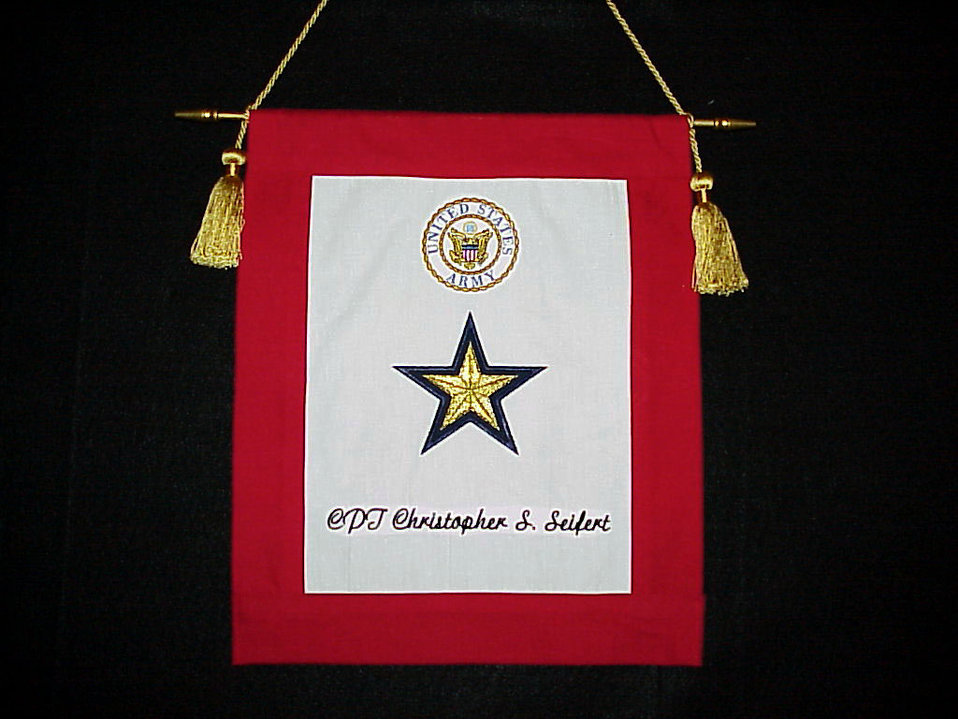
Spouses make flags to honor ultimate sacrifice

ABERDEEN PROVING GROUND, Md. (AFPN) -- Two Air Force spouses are helping revive an old tradition to honor the families of servicemembers killed in battle with